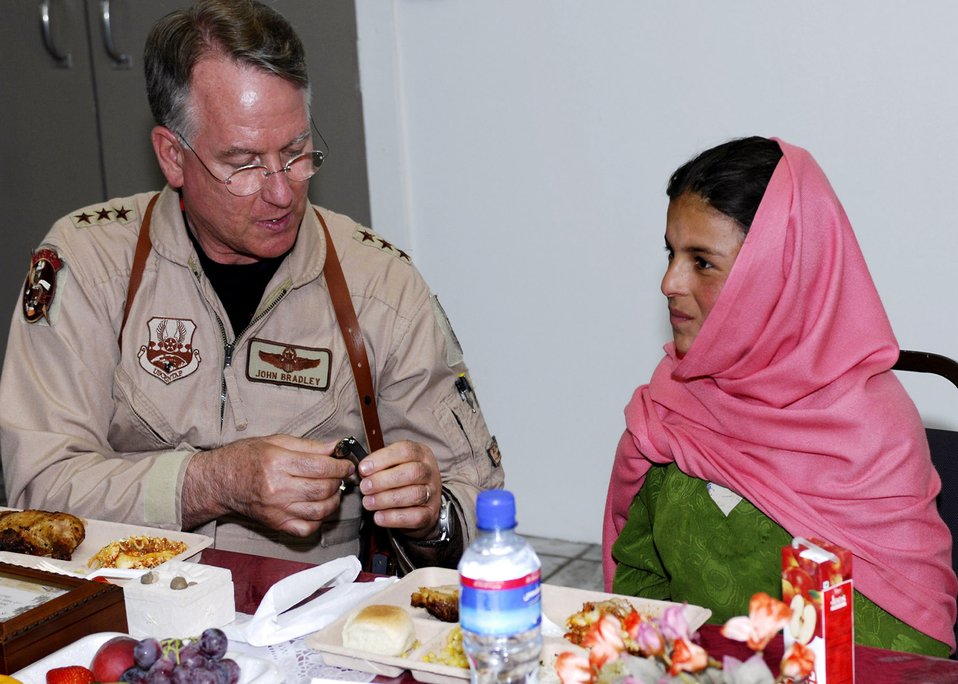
AFRC commander presents goods to Afghan girl, village

Lt. Gen. John Bradley unclasps a watch for Lamia, a 10-year-old Afghan girl he met last winter during a humanitarian aid drop to her village. Jan Bradley, wife of General Bradley, spearheaded a donation drive that collected several boxes of supplies specifically for Lamia and her village of Shakal and were presented here May 30. General Bradley is the Air Force Reserve Command commander.